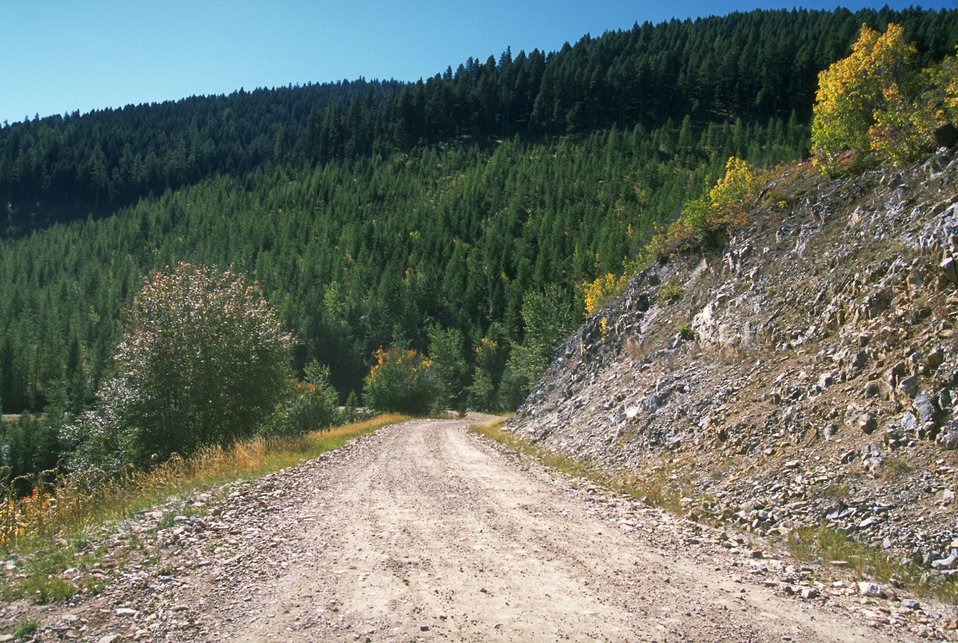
Garnet Back Country Byway view from road